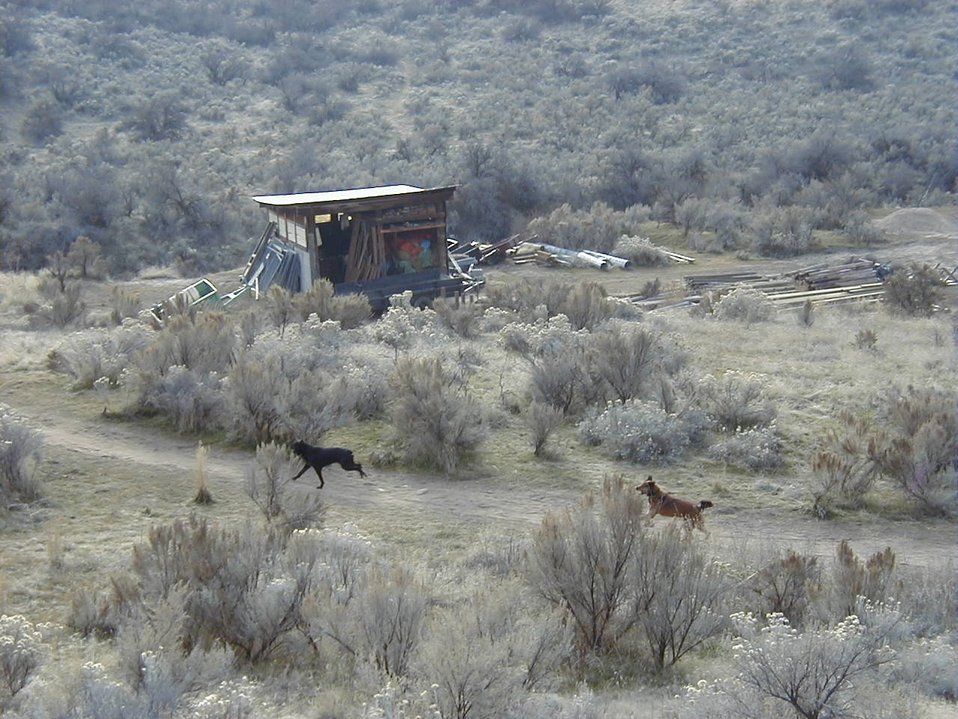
Environmental Education McCord house Boise Front Foothills Fire Safety and Urban interface Four Rivers Field Office LSRD Lower Snake River District